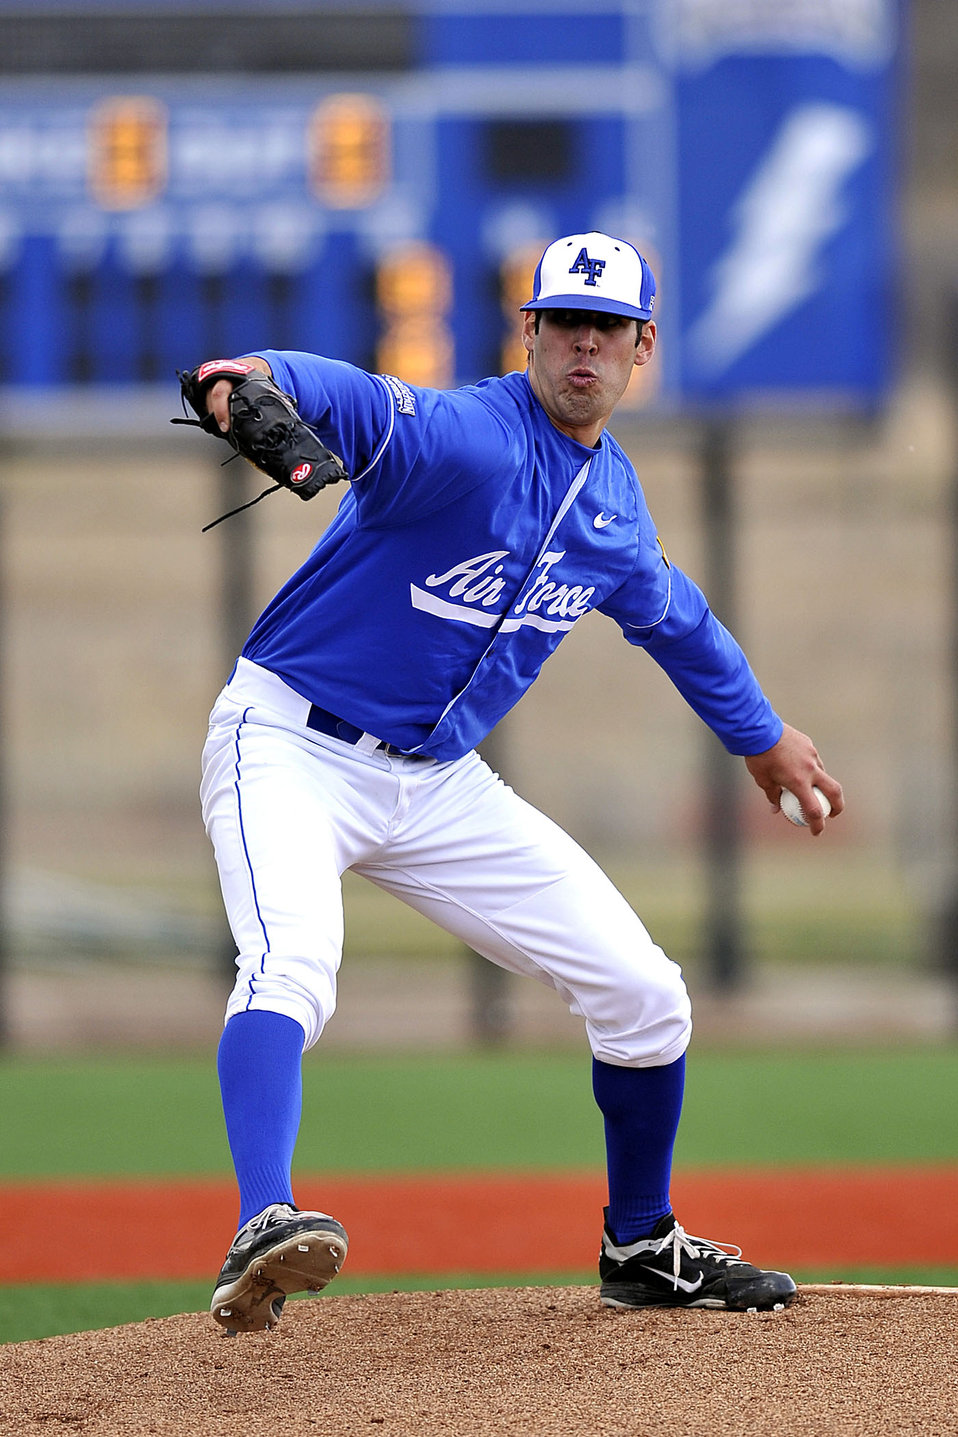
Falcons vs. Bears

Air Force Academy Falcons pitcher Michael Ceci starts on the mound against the Northern Colorado Bears April 19, 2011, at Falcon Field in Colorado Springs, Colo. The Bears took the lead in the top of the ninth when first baseman Jarod Berggren blasted one over the right-field fence with 2 outs and a full count to lift Northern Colorado over the Falcons 6-5.